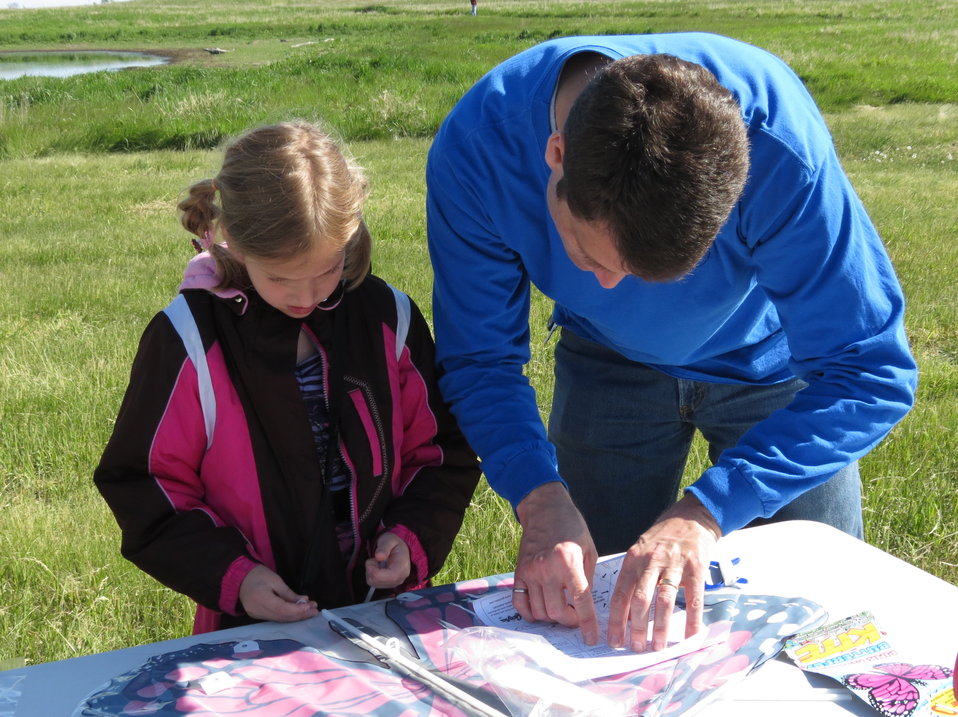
Kites in Flight